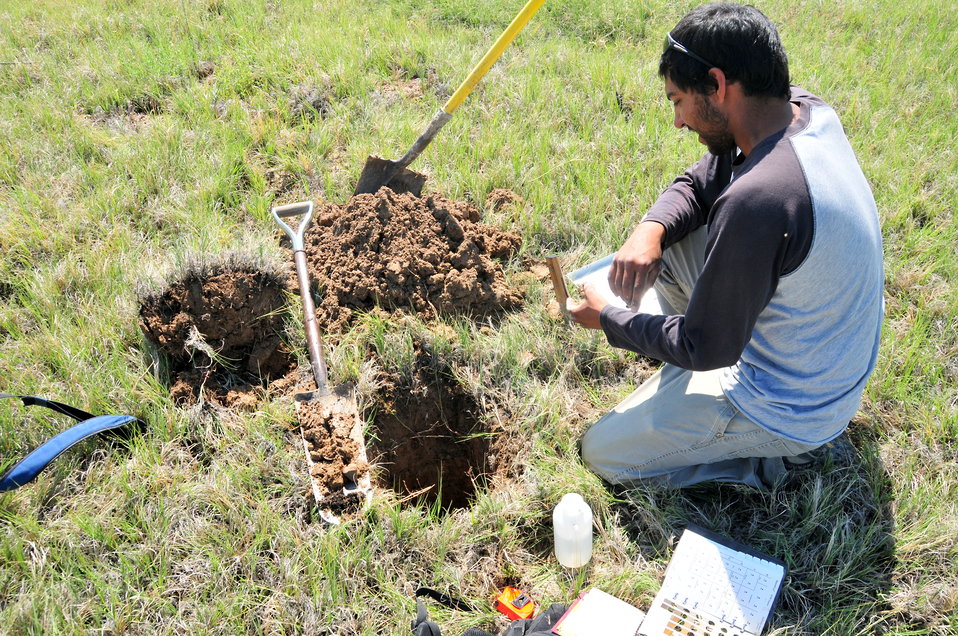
Natural Resources Conservation Service Soil Scientist mapping soils on Seedskadee NWR

A Soil Scientist with the Natural Resources Conservation Service examines soils on Seedskadee National Wildlife Refuge. Once mapped, the information will be useful in future planning and management activities on the refuge.